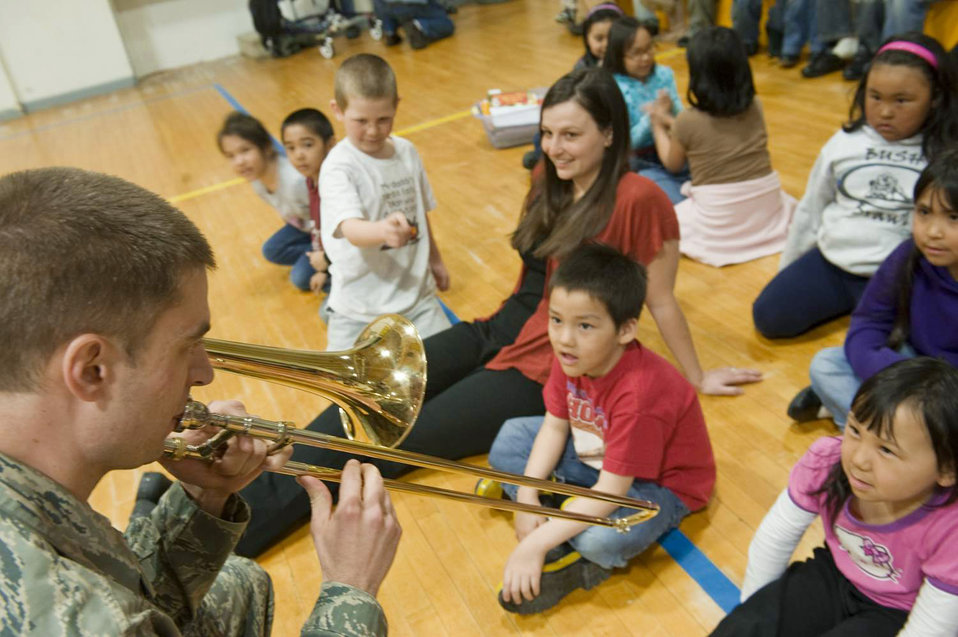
Northern Lights entertains native Alaskans during Operation Artic Care

A musician from the Pacific Air Forces Northern Lights brass ensemble speaks with Kotzebue elementary students during Operation Artic Care about his trombone April 20, 2010, in Kotzebue, Alaska.